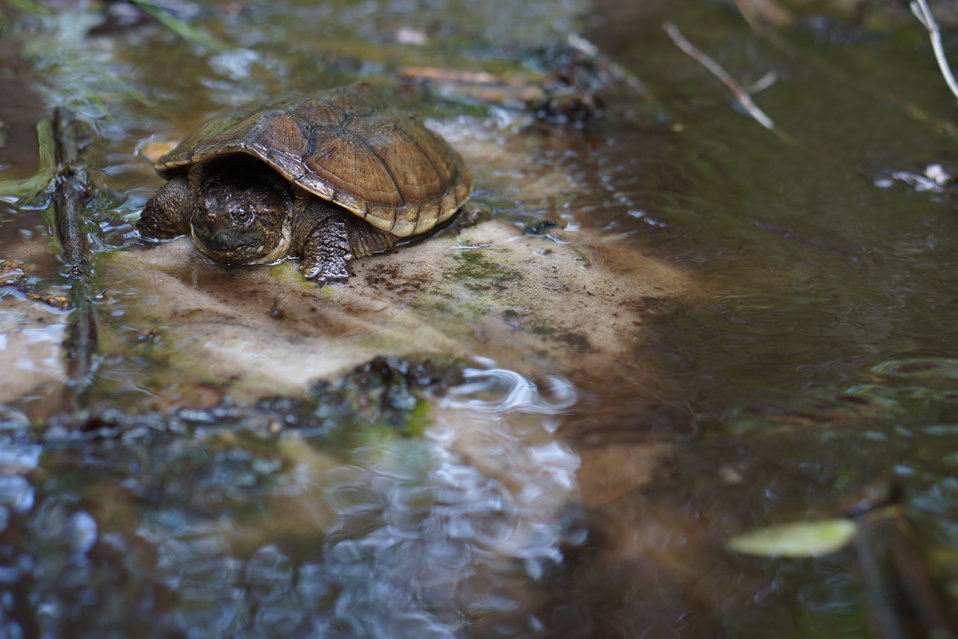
Snapping turtle on a sand mound

In May, bog conservationists from Tennessee, North Carolina, and Georgia convened in the north Georgia mountains for the spring, 2014 meeting of the Bog Learning Network. The event provided an opportunity for biologists to see, first hand, the result of management efforts at two north Georgia bogs. More importantly, the outings provided an opportunity to share innovative approaches to bog management, such as the role of the Georgia Plant Conservation Alliance in conserving rare plants and coordinating a cadre of volunteers to work on bog management.

The Bog Learning Network was convened in the winter of 2013 as a way to bring together people working for bog conservation across the Southern Appalachians. Southern Appalachian bogs are one of North America’s rarest habitats and home to many rare plants and animals.